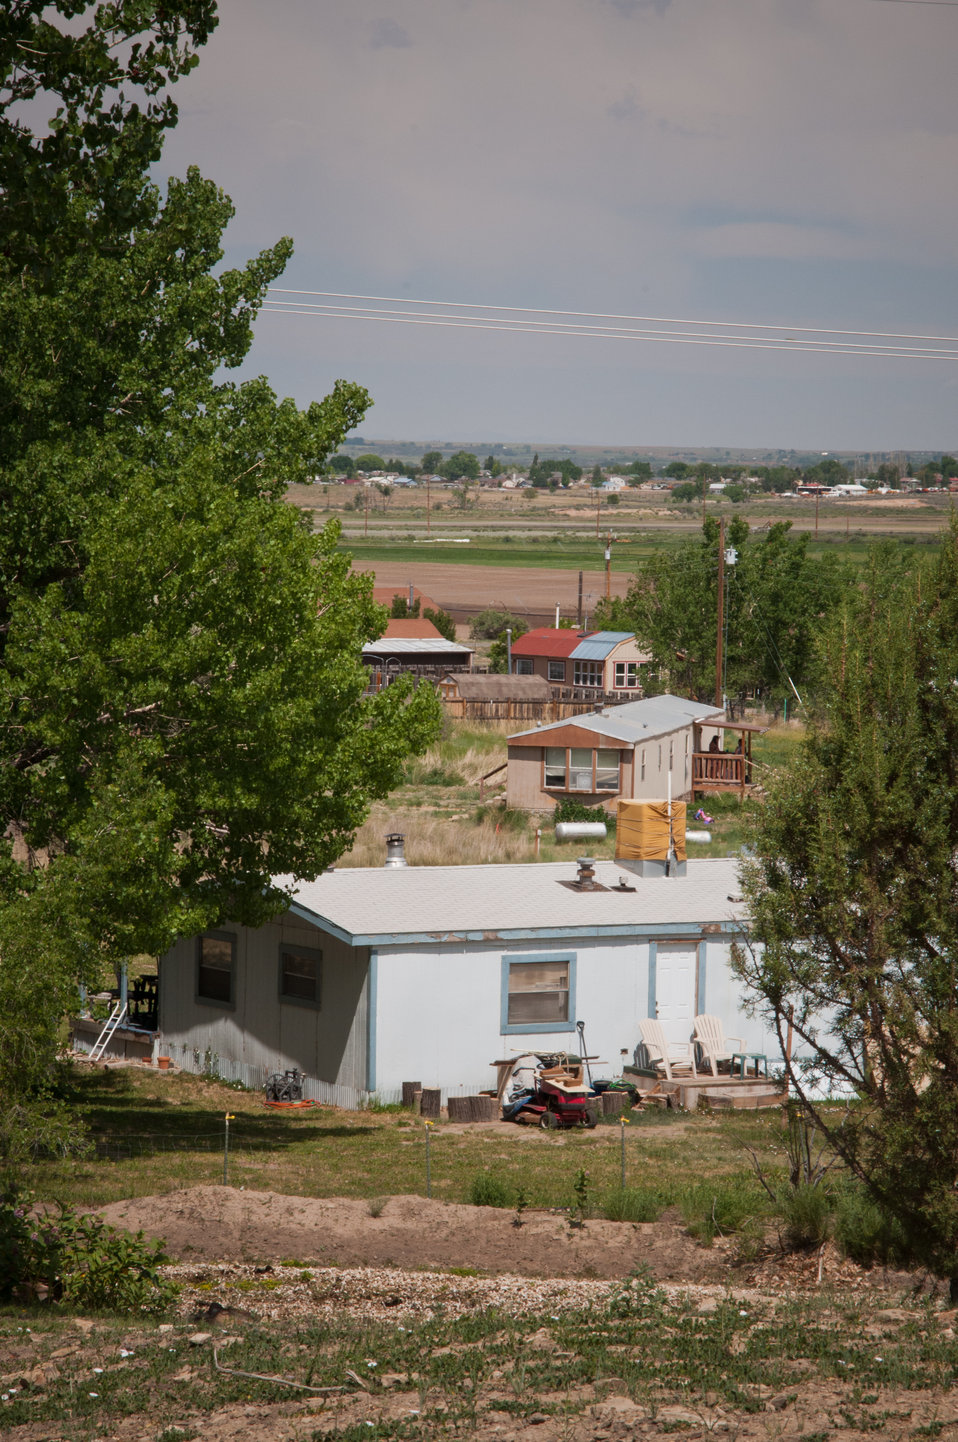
The U.S. Department of Agriculture (USDAS) StrikeForce Initiative in cooperation with public and private organizations offers many economic grants, loans and conservation contracts through USDA's Rural Development (RD) and the Natural Resources of Conservation Service (NRCS) for areas of rural America with a high percentage of people living below the poverty level and considered economically distressed.